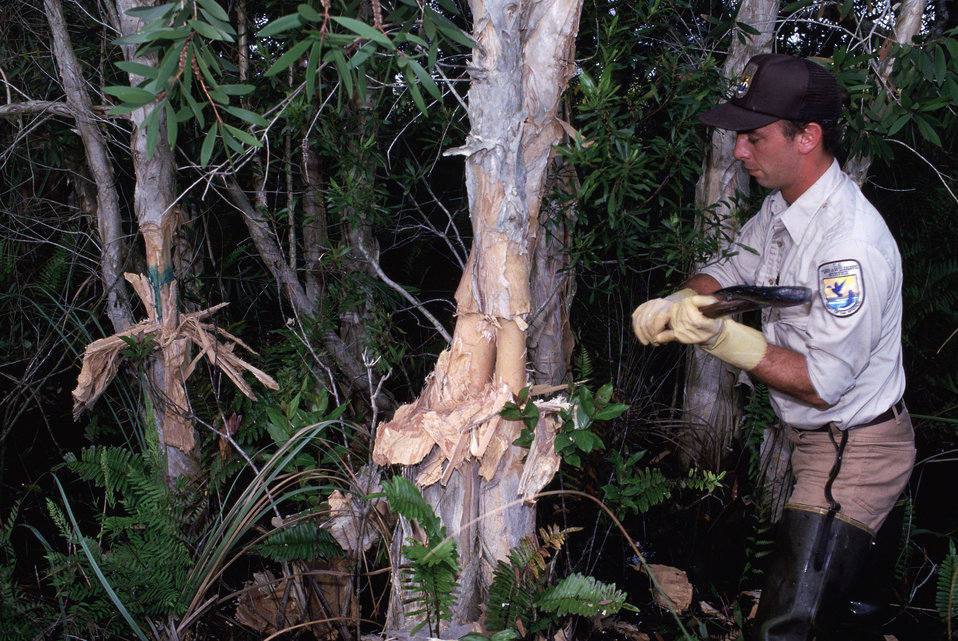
Controlling exotic melaleuca

A U.S. Fish and Wildlife Service employee takes an axe to an invasive melaleuca tree at Arthur R. Marshall Loxahatchee National Wildlife Refuge in Florida. (John and Karen Hollingsworth)